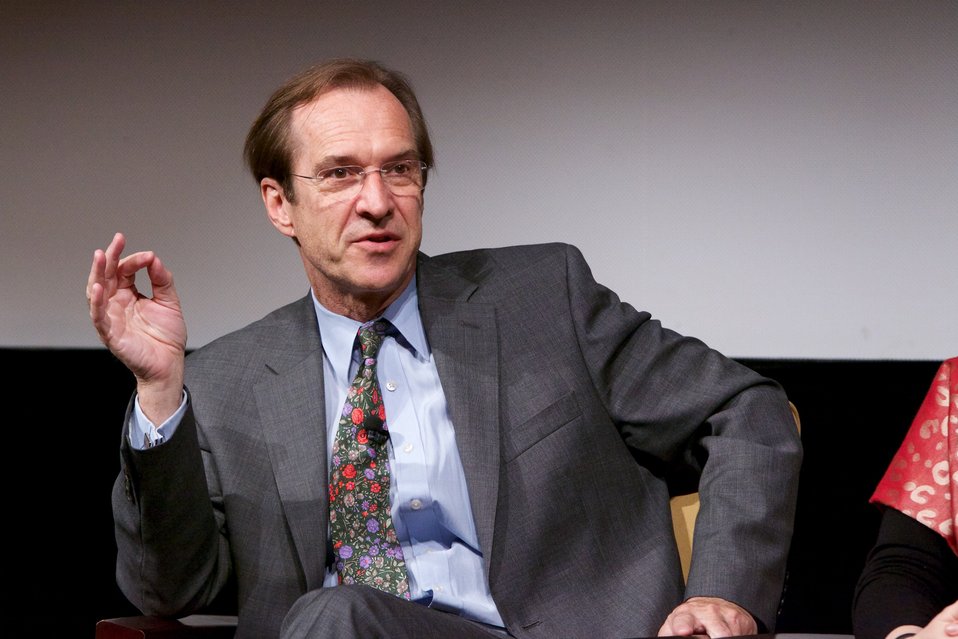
Jazz Diplomacy: Sending America's Music to the World